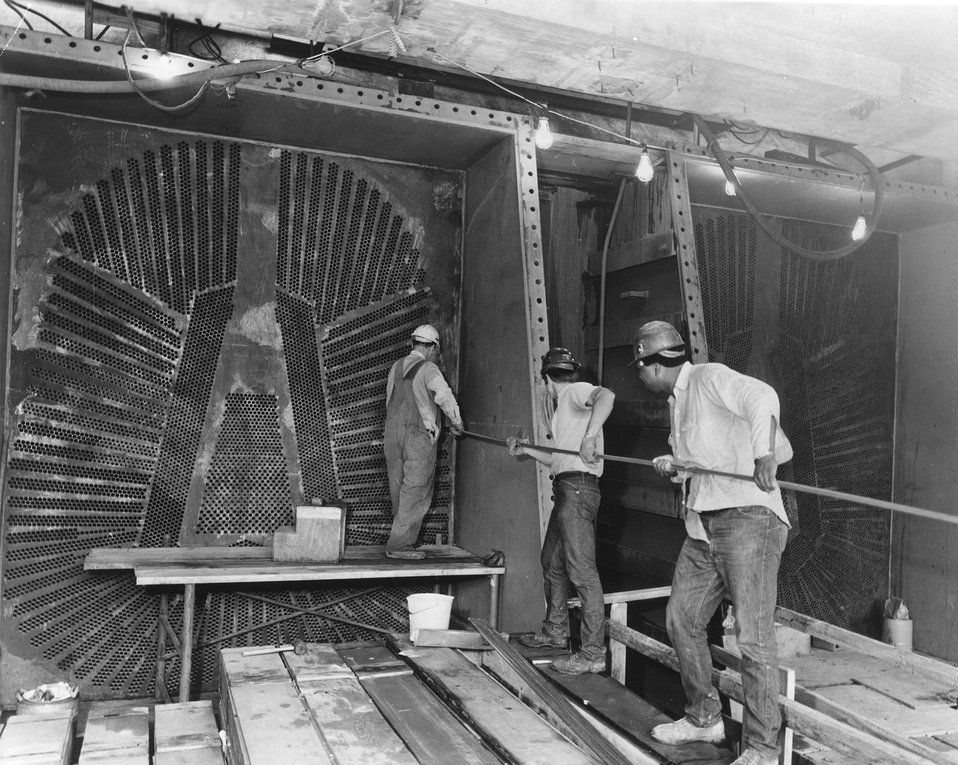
Installation of condenser tubing at TVA's Browns Ferry Nuclear Power Plant on Wheeler Lake 10 miles southwest of Athens, Alabama. Circa 1973.